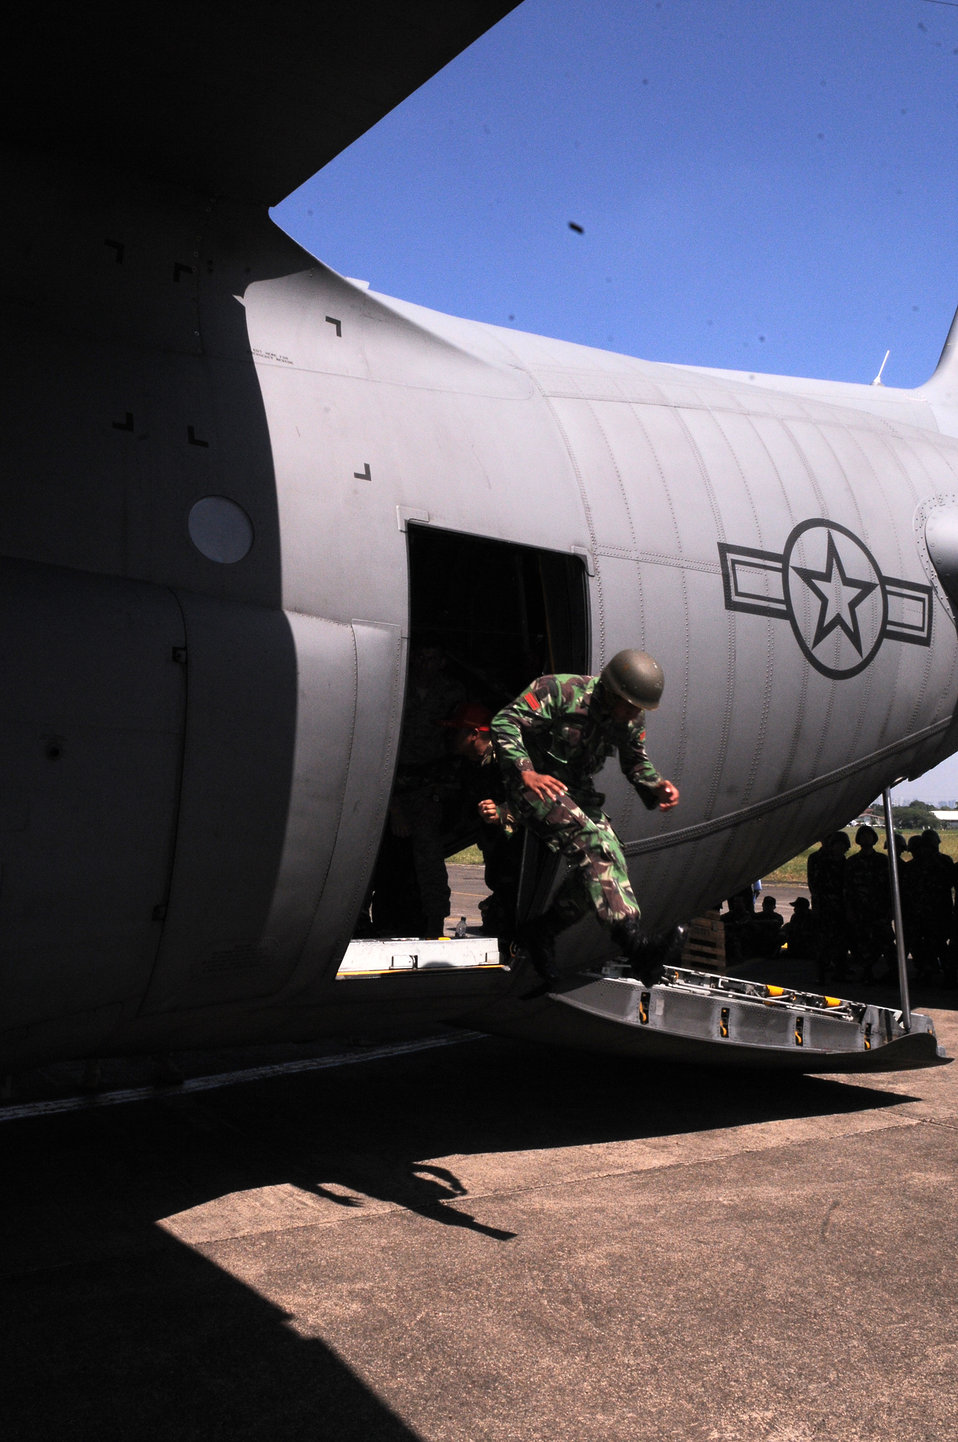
Exercise shows U.S. partnership with Indonesia

An Indonesian airman jumps from a U.S. Air Force C-130 Hercules during Exercise Cope West April 17, 2010, at Halim Air Base, Indonesia.